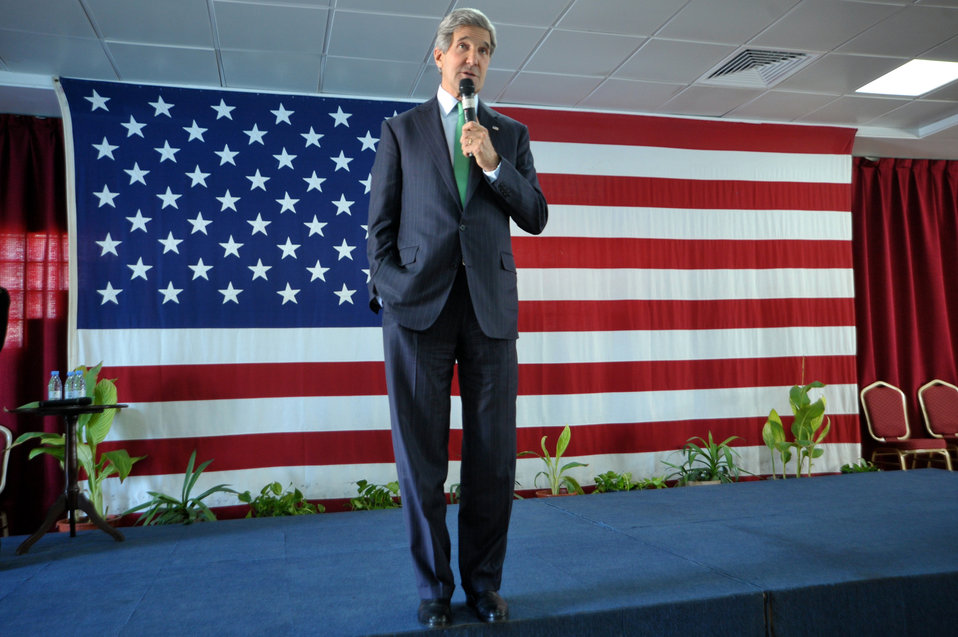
Secretary Kerry Addresses the Staff and Families of Consulate General Jeddah

U.S. Secretary of State John Kerry addresses the staff and families of the U.S. Consulate General in Jeddah, Saudi Arabia, on June 25, 2013.